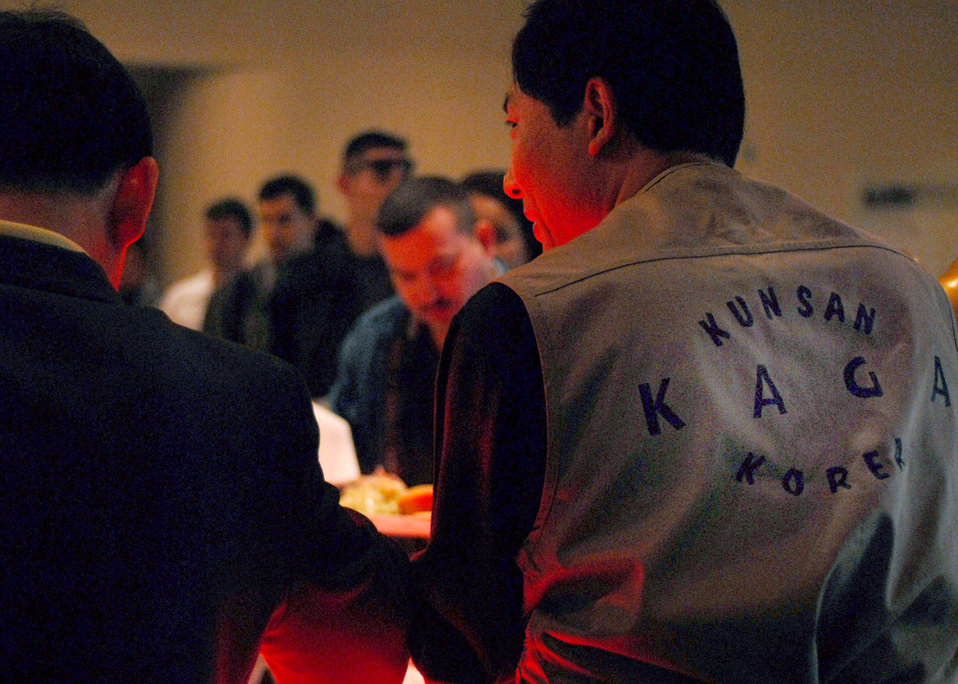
Honorary commanders program in full swing at Kunsan

Honorary commanders sponsored a friendship day for Airmen of the 8th Fighter Wing here Nov. 12. More than 60 honorary commanders sponsored the event for approximately 400 Wolf Pack Airmen to increase relationships between the base and local community.